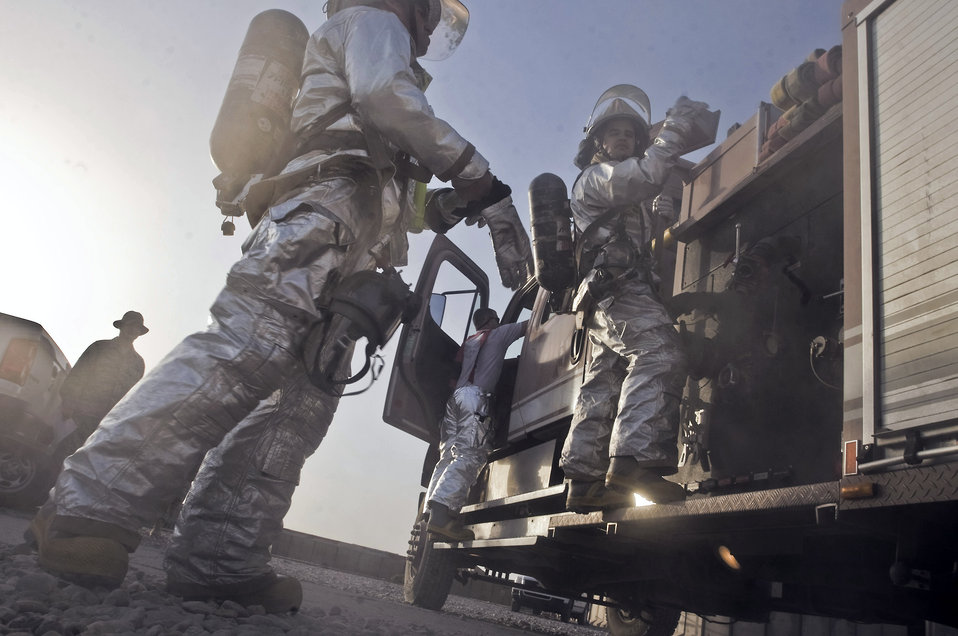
Practice makes perfect

Firefighters with the 407th Expeditionary Civil Engineer Squadron respond to a training exercise Oct. 3 at Ali Base, Iraq. They conducted the training at the passenger terminal to evaluate aspects of fire protection such as dispatch and response.